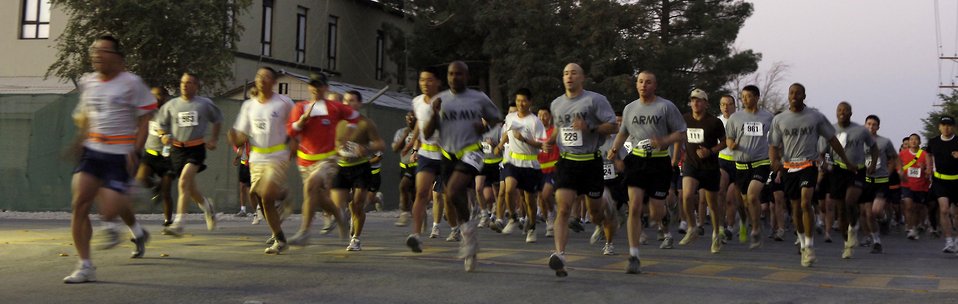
Running for more than fitness

Runners sprint to the front of the pack to begin the Women's Equality Day 5K run at Bagram Air Base, Afghanistan, Aug. 28. More than 900 servicemembers participated in the event.